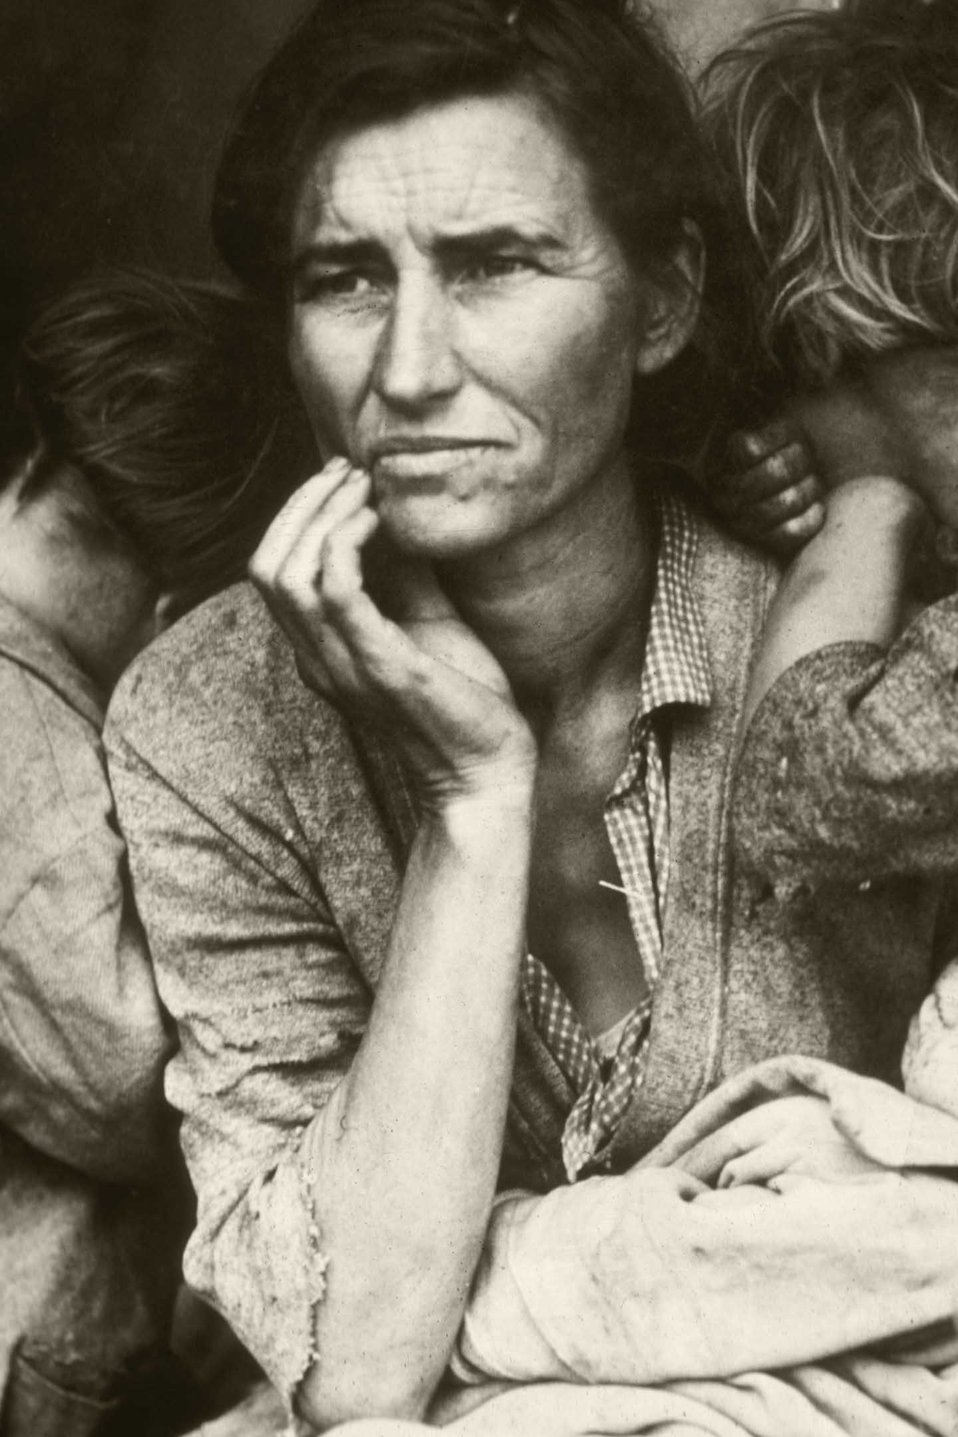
Destitute pea pickers in California. Mother of seven children. Age thirty-two. Nipomo, California.